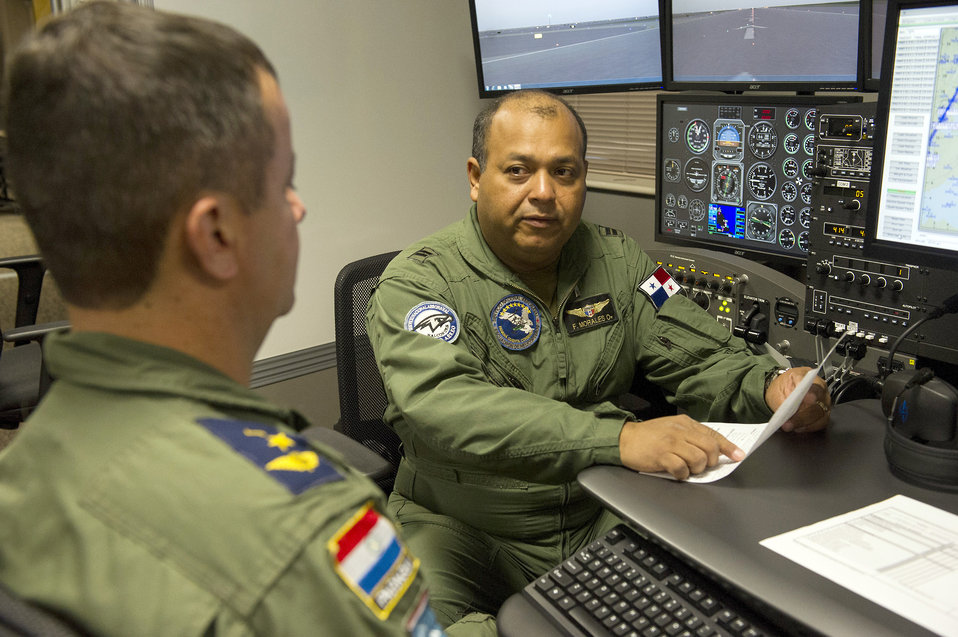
Inter-American Air Forces Academy

Lt. Col. Roberto Idoyaga, Paraguay Air Force (left), partner nation instructor at the Inter-American Air Forces Academy, evaluates Lt. Francisco Morales, a student from Panama, on his final check ride during the Instructor Pilot Instrument Procedures course in Joint Base San Antonio-Lackland, TX, Dec. 7, 2012. The IPIP course teaches partner nation students who are experienced pilots in their respective branches of services to become instrument flight instructors. The instruction includes Federal Aviation Administration and International Civil Aviation Organization rules and procedures.